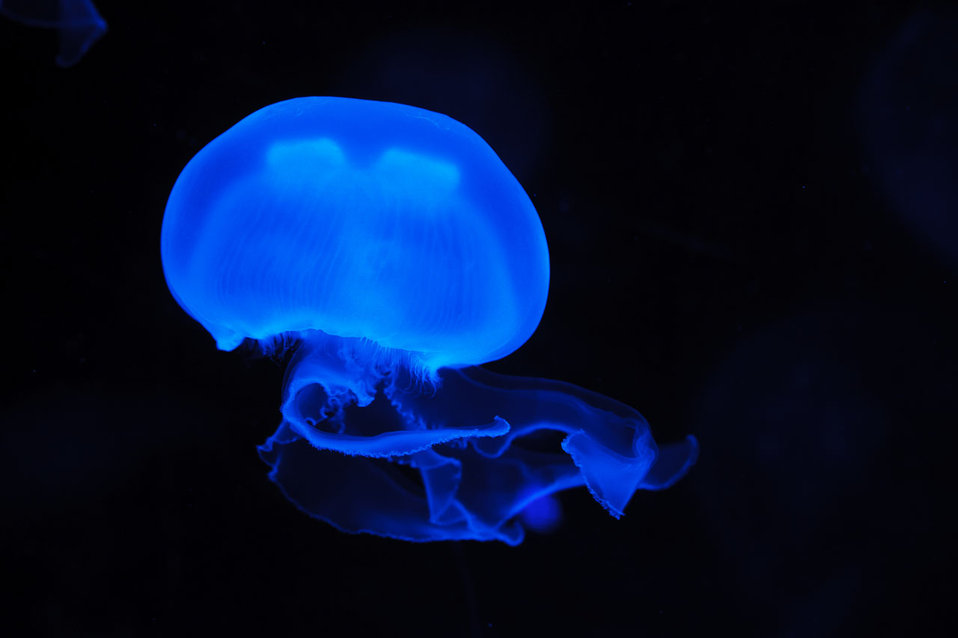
Blue moon jellyfish

Translucent blue jellyfish against dark background (aurelia aurita).